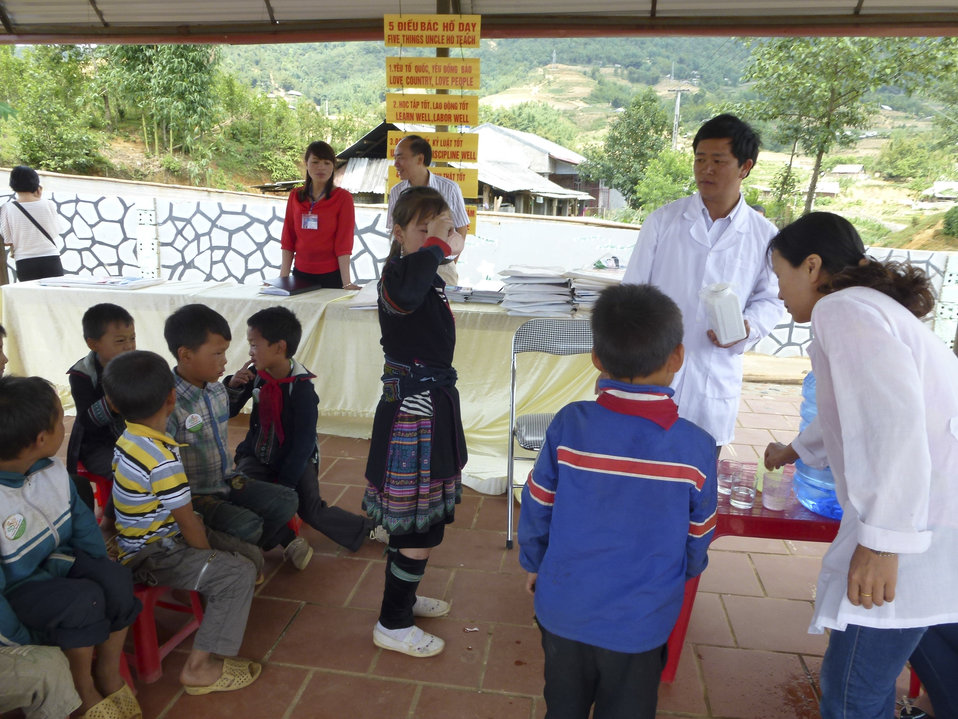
USAID supports deworming medication for school children in Sa Pa district of Lao Cai province

May 13, 2014.